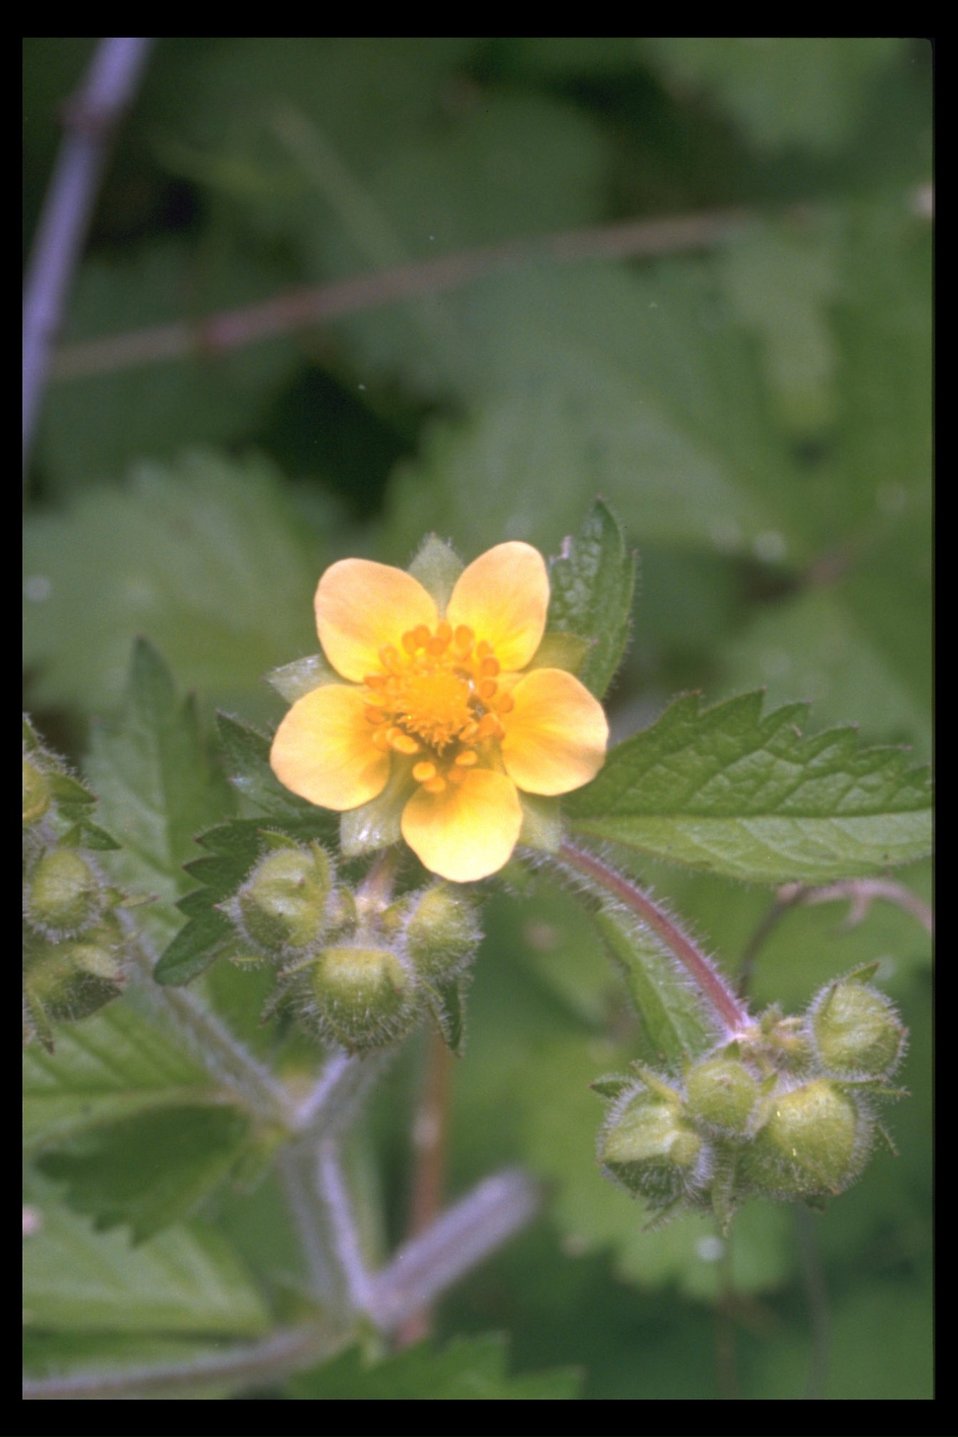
Sticky Cinquefoil (Potentilla glandulosa) at Lower Table Rock.